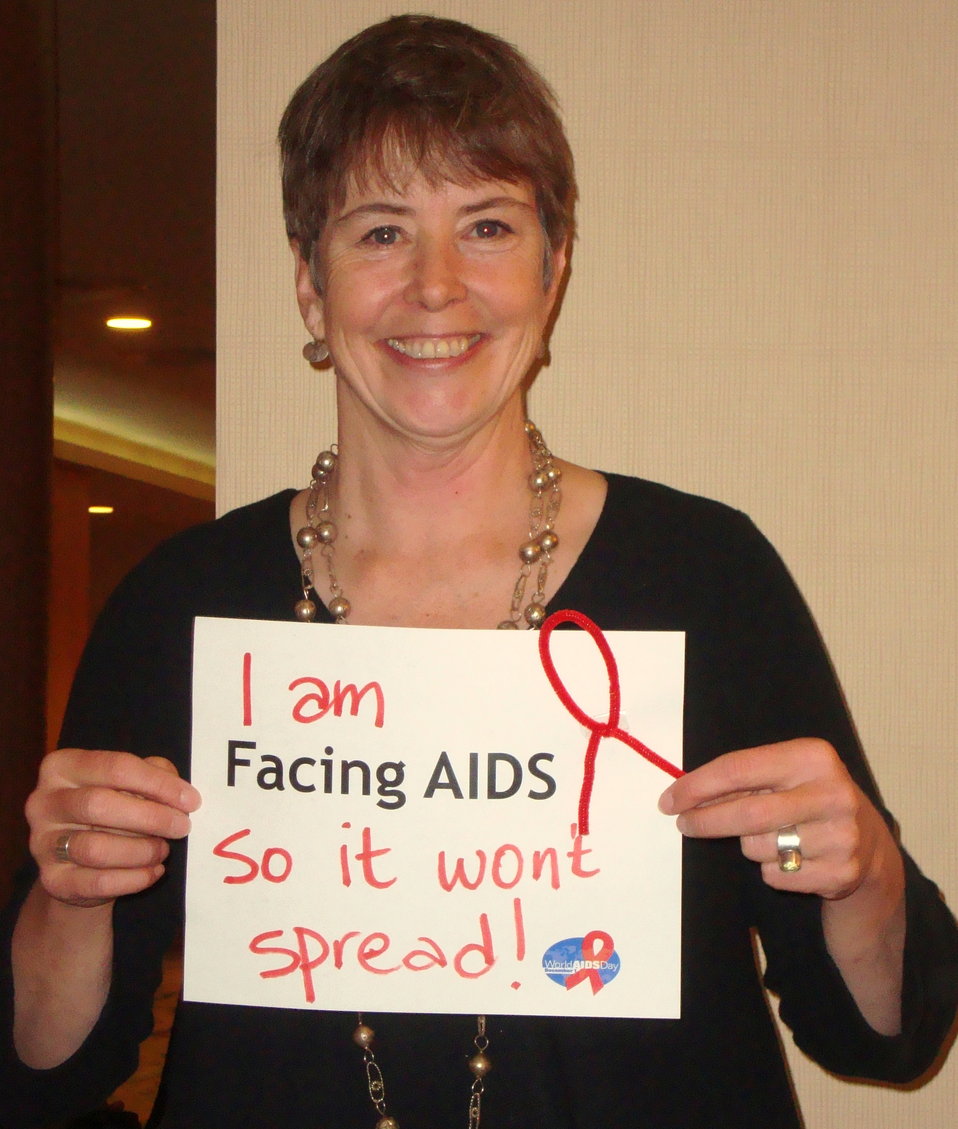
FacingAIDSCampaign 016